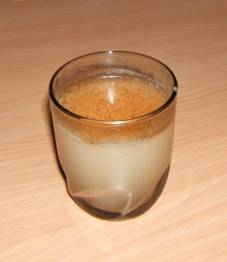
glass of sahlep